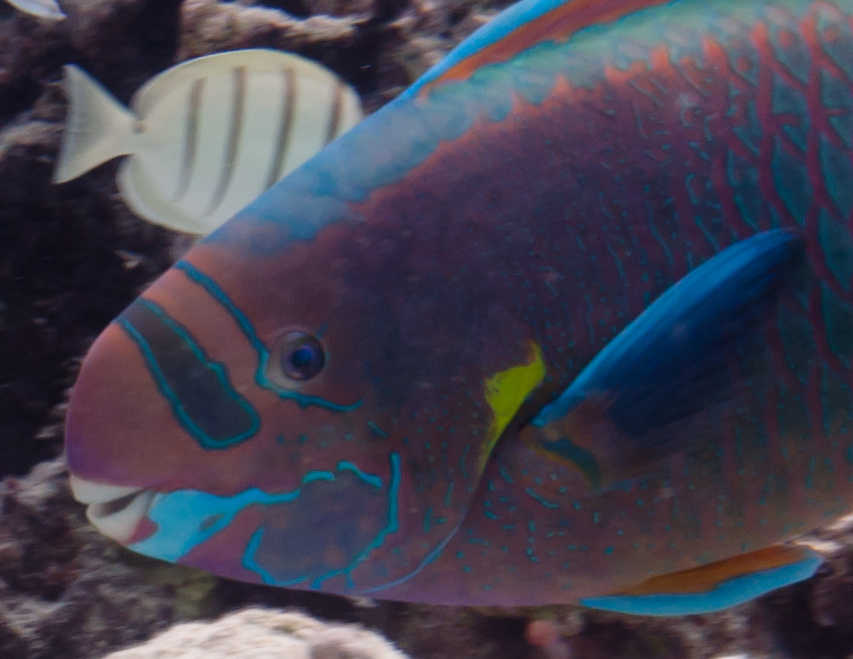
uhu uliuli, or spectacled parrotfish

French Frigate Shoals, Hawaiian Islands National Wildlife Refuge, Papahānaumokuākea Marine National Monument